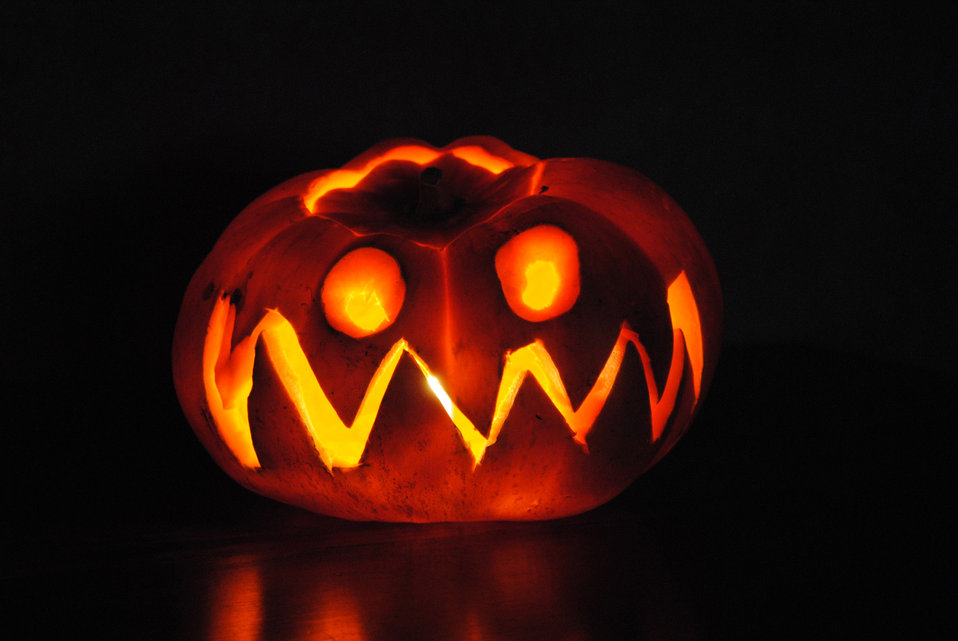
Halloween pumpkin.